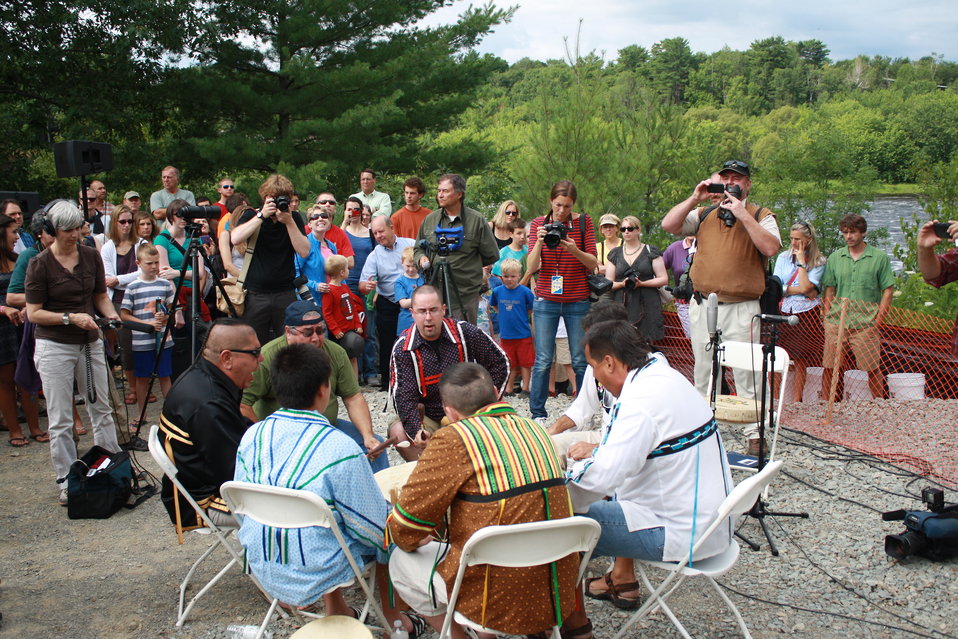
Veazie Dam Removal

The press conference began with a sacred ceremony and drumming led by the Penobscot Indian Nation.